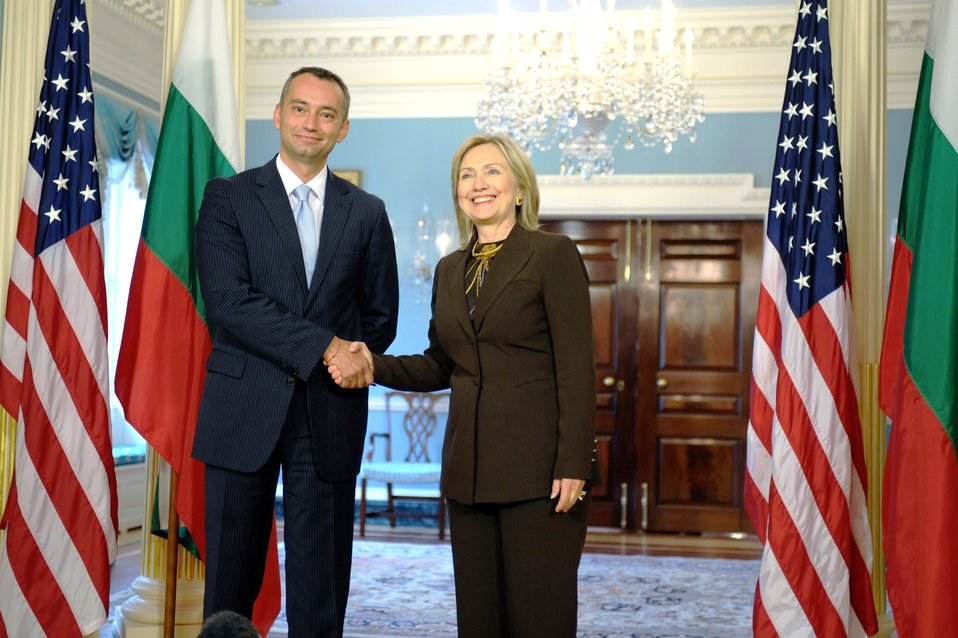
Secretary Clinton Holds a Bilateral With Bulgarian Foreign Minister Mladenov

U.S. Secretary of State Hillary Rodham Clinton holds a bilateral meeting with Bulgarian Foreign Minister Nickolay Mladenov at the U.S. Department of State in Washington, D.C., October 5, 2010.